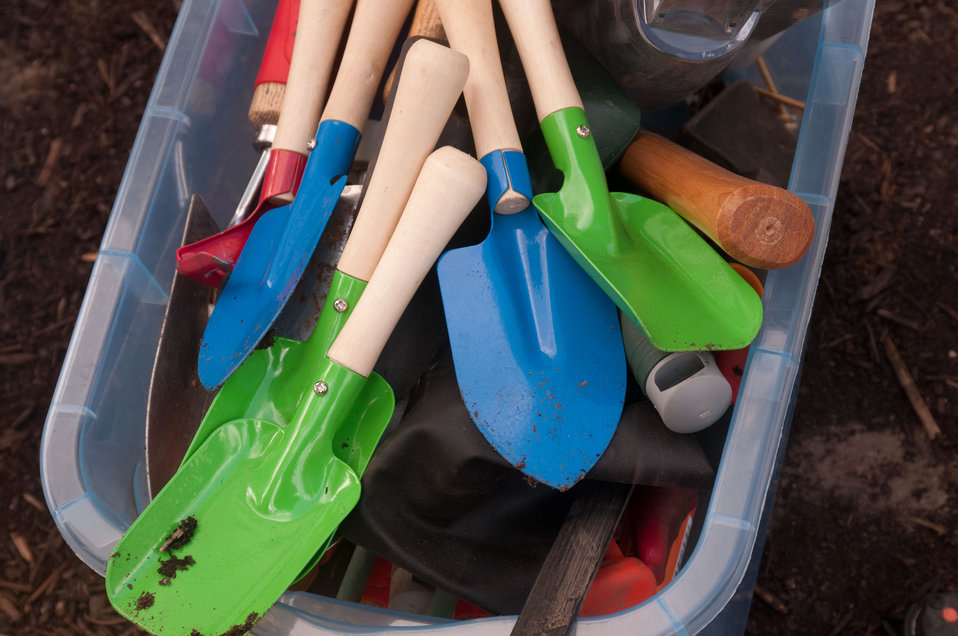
Garden tools for use by more than 30 Students from Eastern and Western Tribes, Southeast Alaska, and Tuba City, Arizona came to the Nation’s Capitol to plant vegetable seeds that are indigenous to North America. The garden is called The Roots of American Agriculture, and is part of the Headquarters’ People’s Garden, at the U.S. Department of Agriculture in Washington, DC on Wednesday, April 21, 2011.